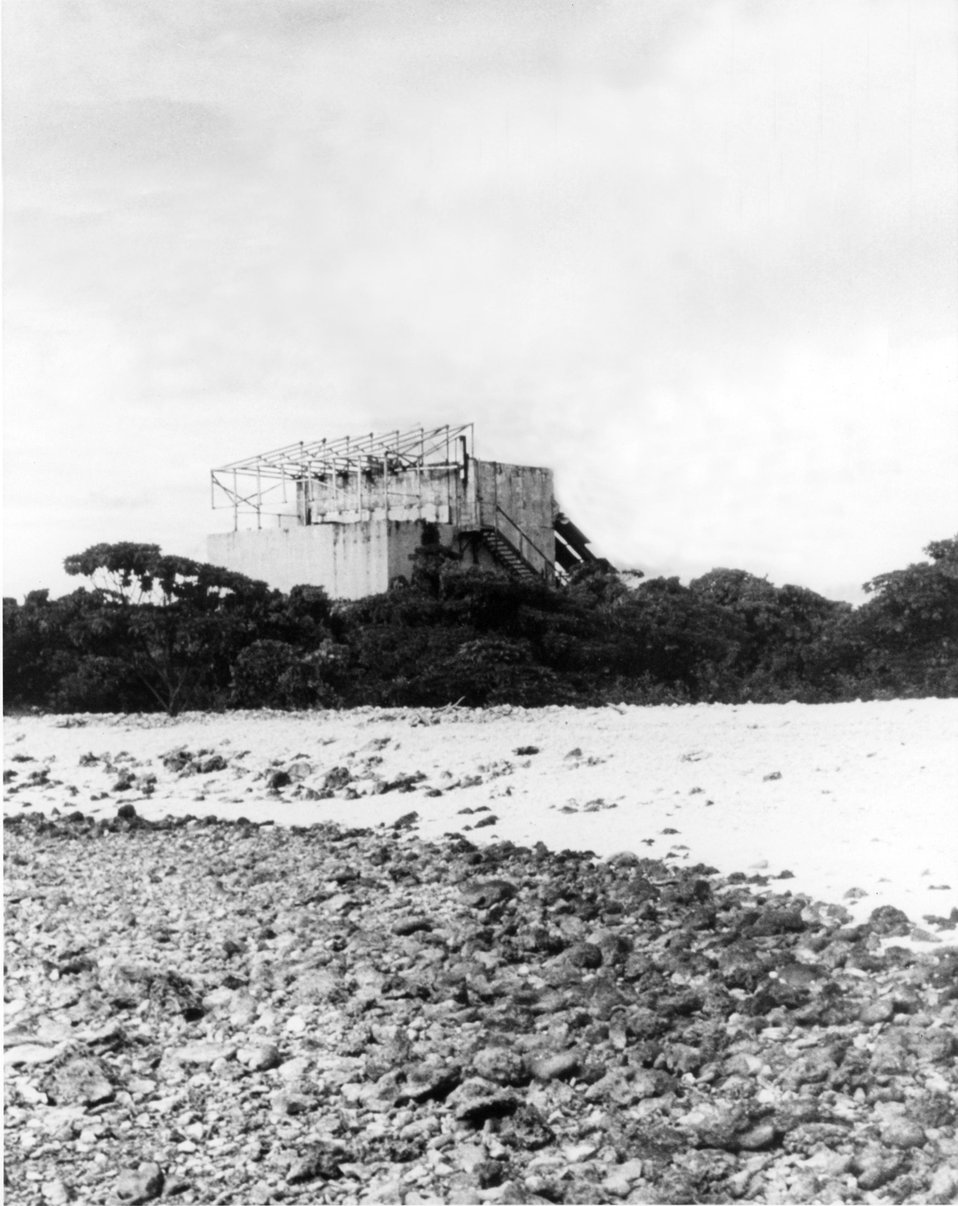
Bikini islands ten years after nuclear tests, inhabits allowed to return.